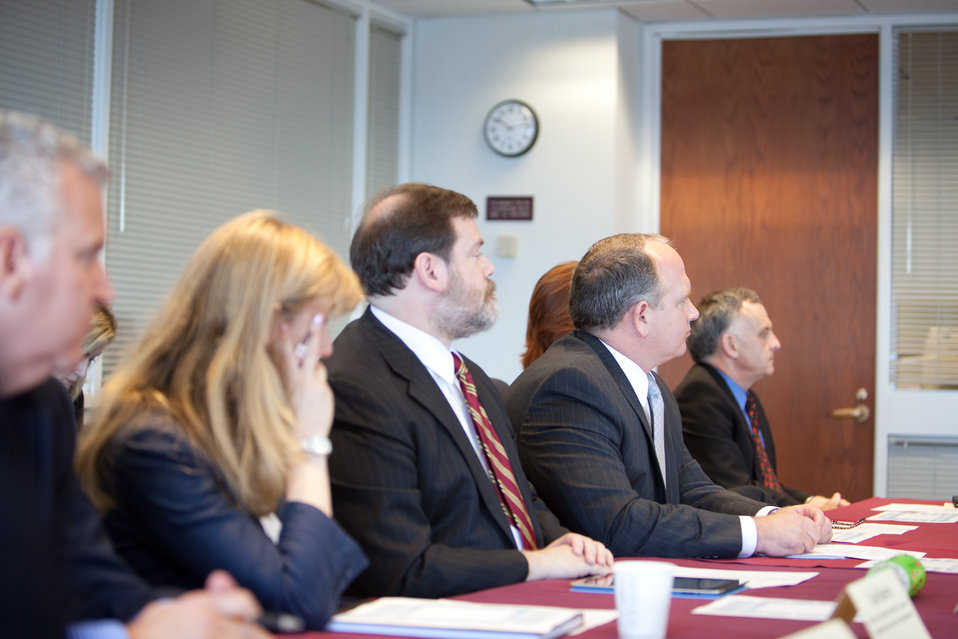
mHealth Attendees Listening to FCC Chairman While He Speaks

Members from the health industry attendees listening to FCC Chairman speak about mHealth. Johnathan Javitt (CEO) of Telcare, David Hankin of Alfred Mann, Yael Harris (Director of the Office of Health IT & Quality) of HRSA, Julian Goldman (Director of Interoperability) of CIMIT, Charles Farlow (Senior Program Manager) of Medtronic, Wendy Nilsen (Health Scientist Administrator, Office of the Director) of NIH.

June 6, 2012 - FCC Headquaters | Washington, DC